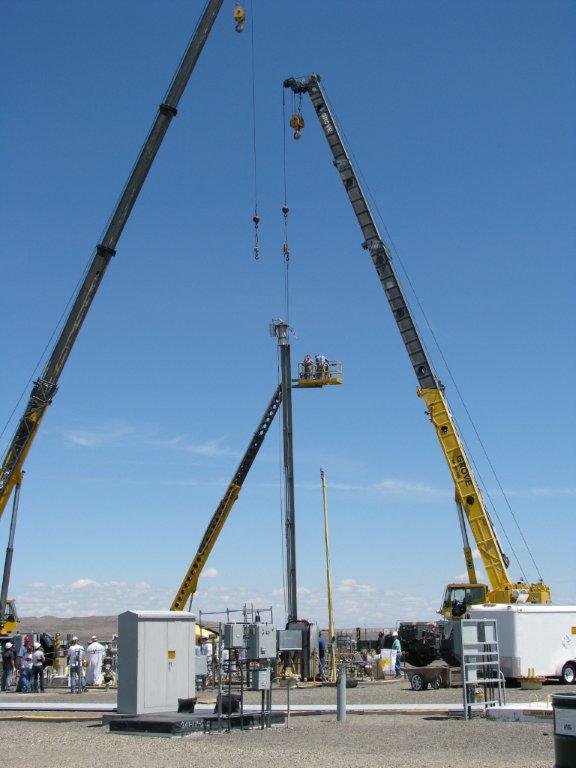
Corrosion probe installation

Two riggers use an aerial lift to install a new Recovery Act-funded corrosion probe into one of Hanford’s double-shell tanks. A corrosion probe is a 50-foot piece of pipe that contains sensors to provide a real-time measurement of tank waste chemistry and tank corrosion monitoring as an added level of protection to the environment.